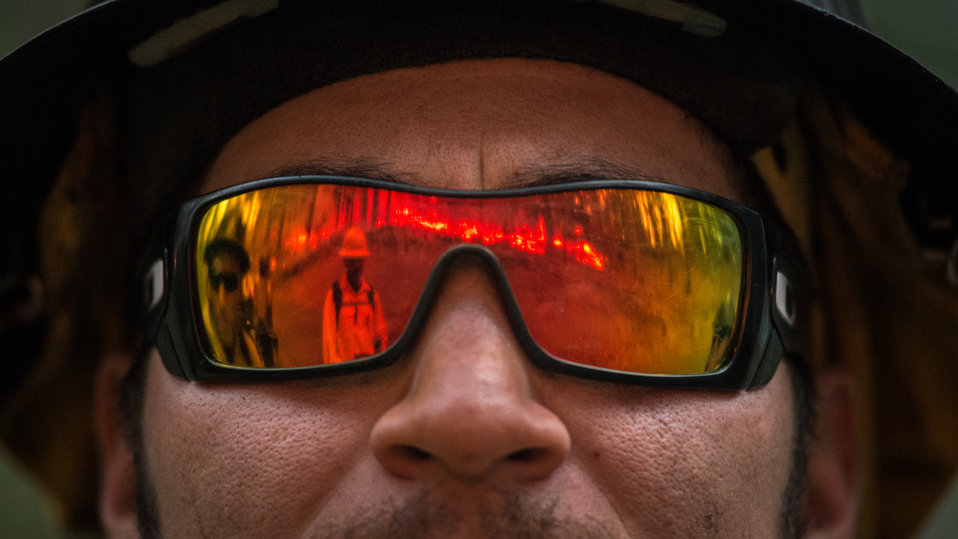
Geronimo Interagency Hotshot Crew, Department of the Interior (DOI) Indian Affairs (IA) Bureau of Indian Affairs (BIA) San Carlos Agency in Arizona; on assignment at the Big Windy Complex Wildlands Fire, approximately 15 miles west of Interstate-5 and East Northeast of Galice, Oregon, conducts a prescribed burn 'burnout' operation to help stop the main fire that may head toward this roadway, on Friday, Aug 9, 2013. The primary mission of the Interagency Hotshot Crews (IHC) is to provide a safe, organized, mobile and highly skilled hand crew for all phases of wildland fire suppression. The arduous duties and specialized assignments required of IHC personnel require uniform staffing, certification, training, equipment, communications, transportation, organization, and qualifications that adhere to interagency standards and guidelines.